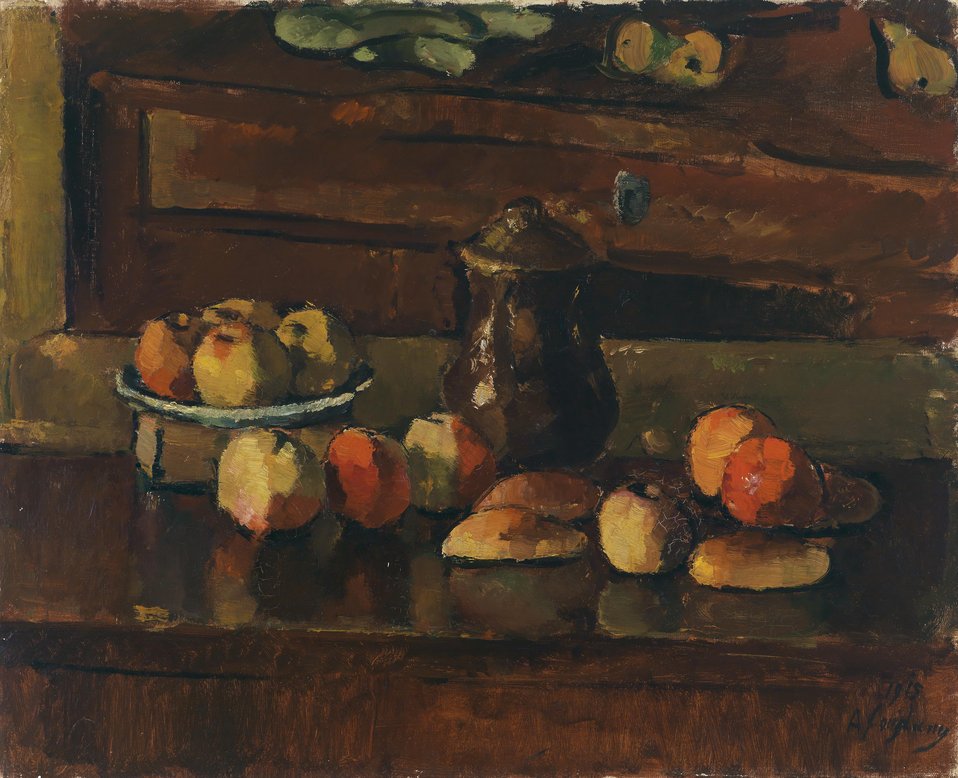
Obststilleben mit Kanne, vor Kommode, signiert, datiert A. Faistauer 1915, Öl auf Leinwand, 55,5 x 68,5 cm